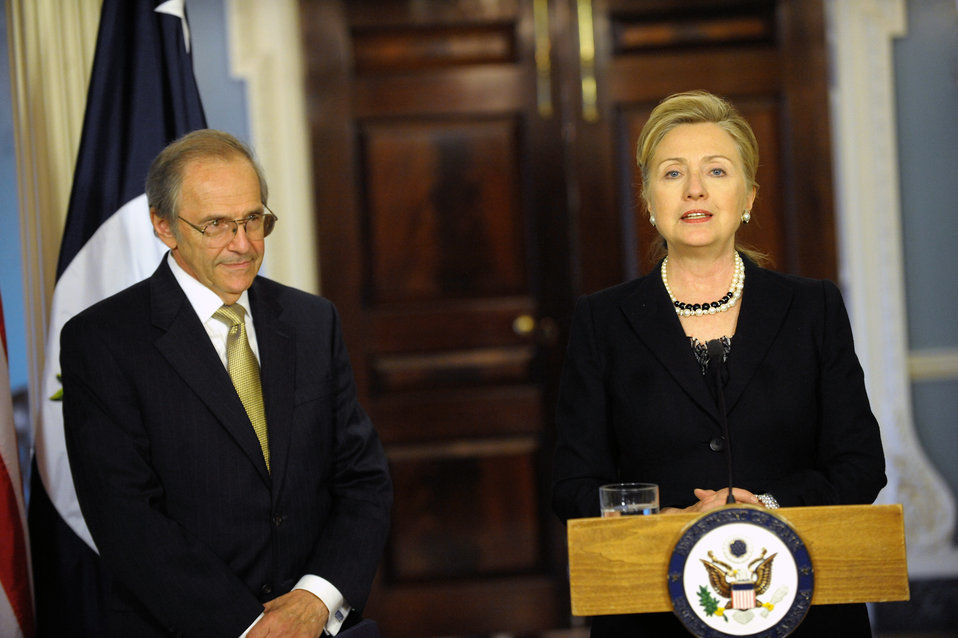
Secretary Clinton Announces New Special Envoy for Sudan, Ambassador Lyman

U.S. Secretary of State Hillary Rodham Clinton announces the appointment of Ambassador Princeton N. Lyman as the new U.S. Special Envoy for Sudan, at the U.S. Department of State in Washington, D.C., on March 31, 2011.